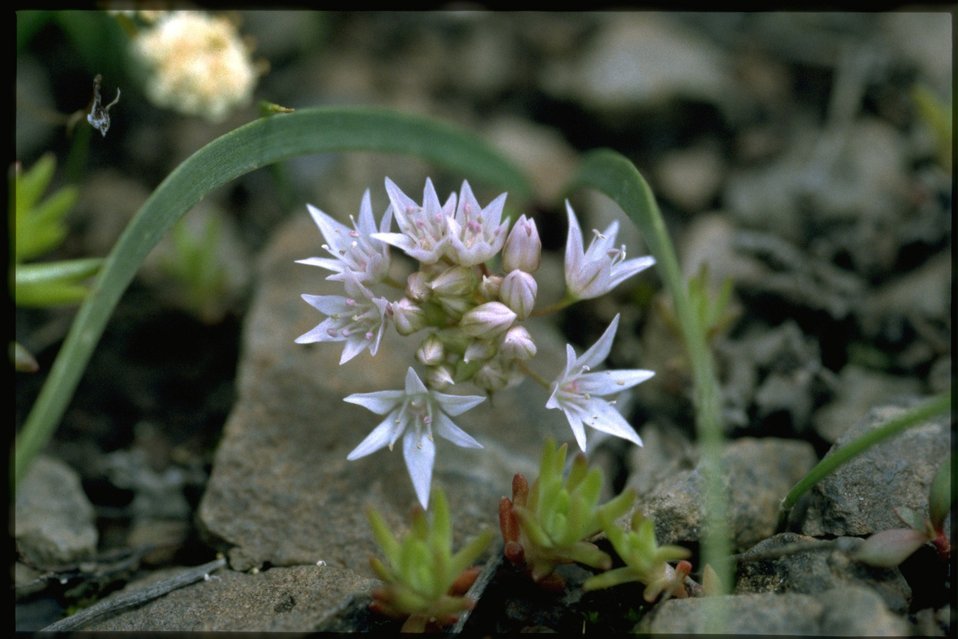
Medium shot of Tolmie's Onion, Allium Tolmiei, wildflowers.